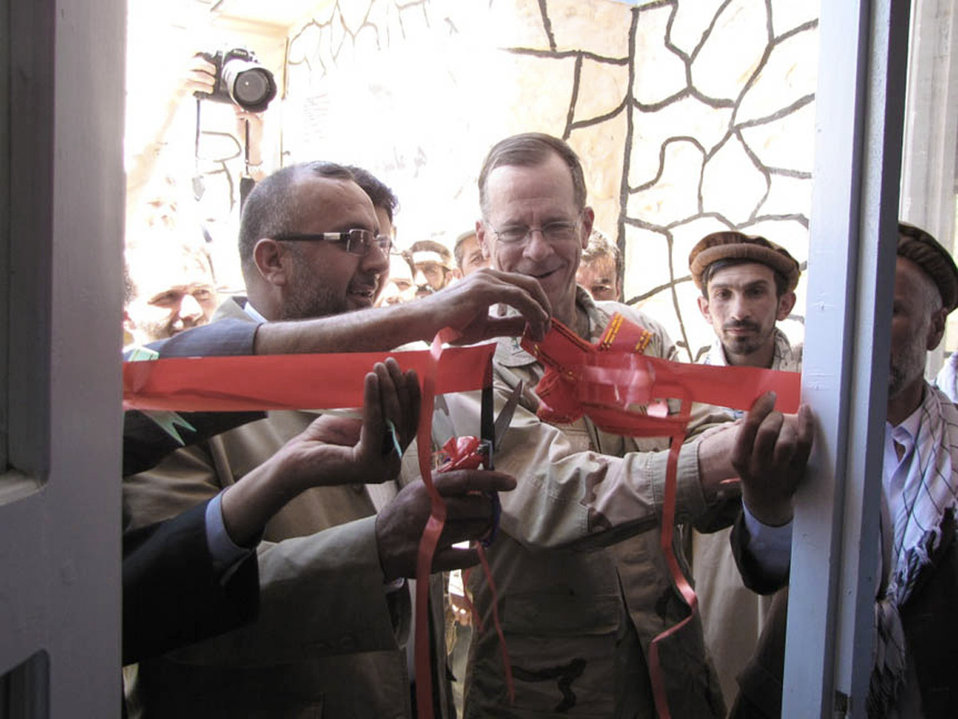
Girls' school opens in Panjshir

Panjshir Governor Haji Bahlol (left) and Navy Adm. Mike Mullen, chairman of the Joint Chiefs of Staff, cut the ceremonial ribbon July 15 at the entrance to the new Peshgur School for Girls in the Khenj district of eastern Afghanistan's Panjshir province.